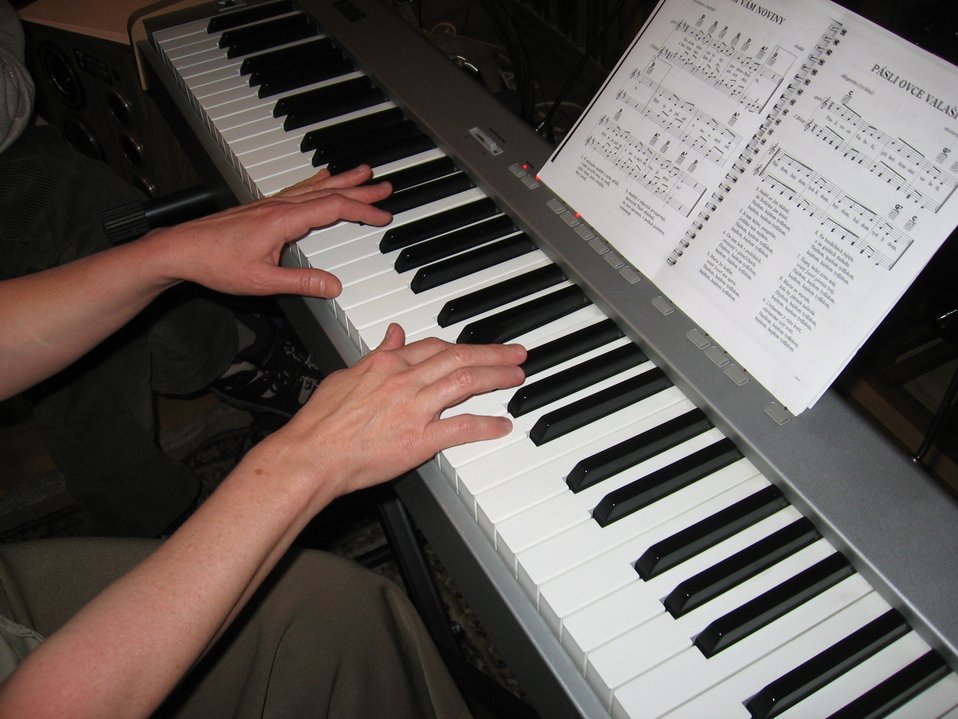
Jadwiga w swoim zywiole